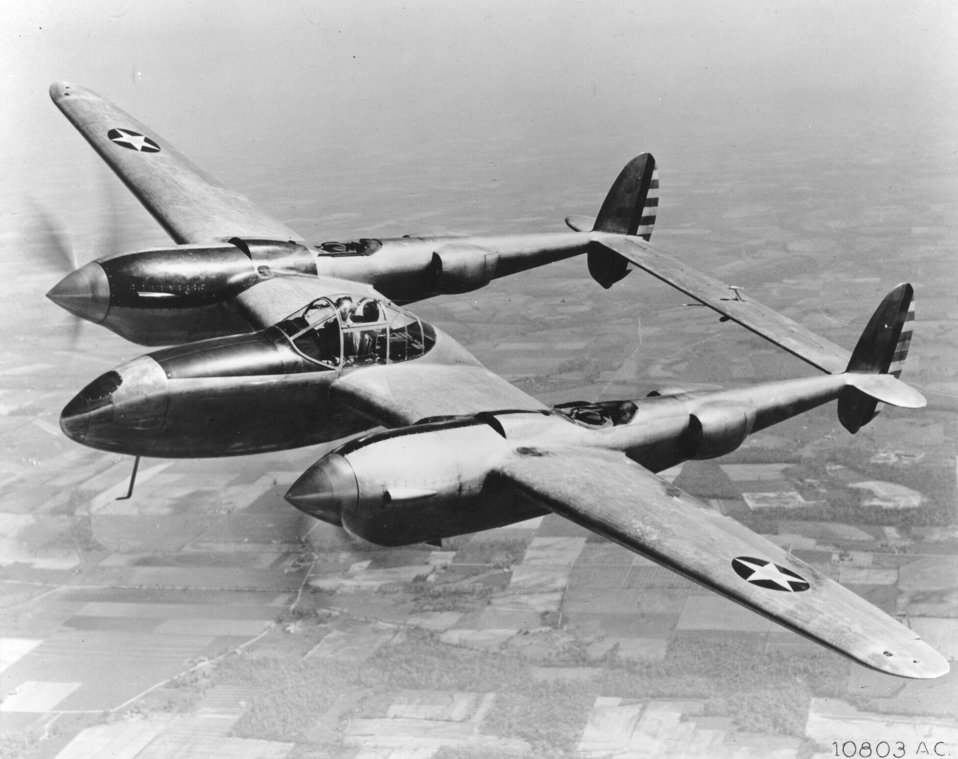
Lockheed YP-38

1940's -- Lockheed YP-38